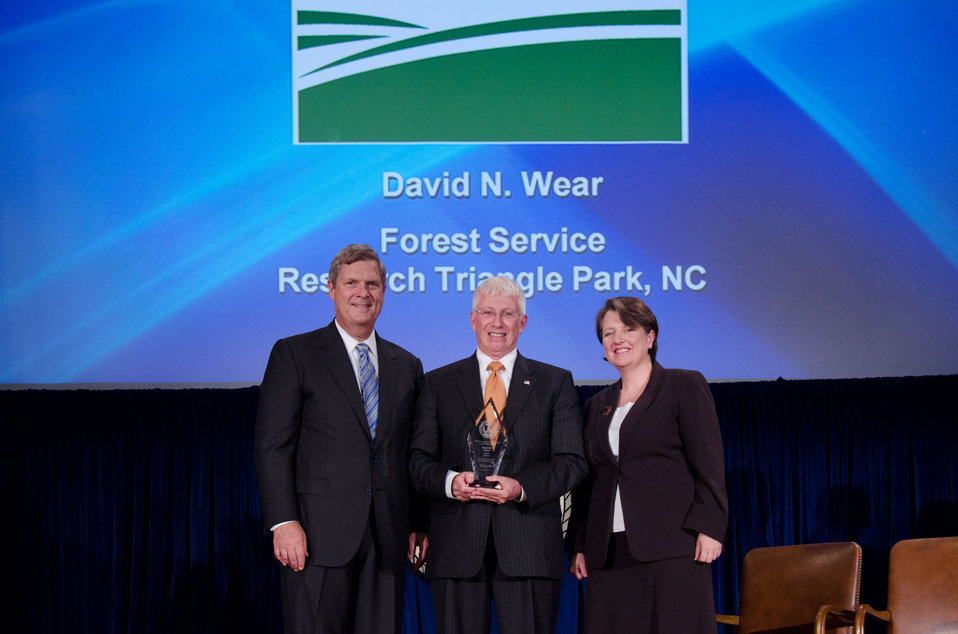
Agriculture Secretary Tom Vilsack (l) and Deputy Secretary Kathleen Merrigan (r), presents the Award for Personal and Professional Excellence to David N. Wear, Forest Service, Research Triangle Park, NC. For his exemplary leadership and scientific contributions significantly influencing the policy and management decisions that ensure that sustainability of natural resources in the southern United States and beyond. Rob Doudrick is accepts the award for David Wear. On Wednesday, September 14, 2011 in the Jefferson Auditorium at the US Department of Agriculture in Washington, DC.